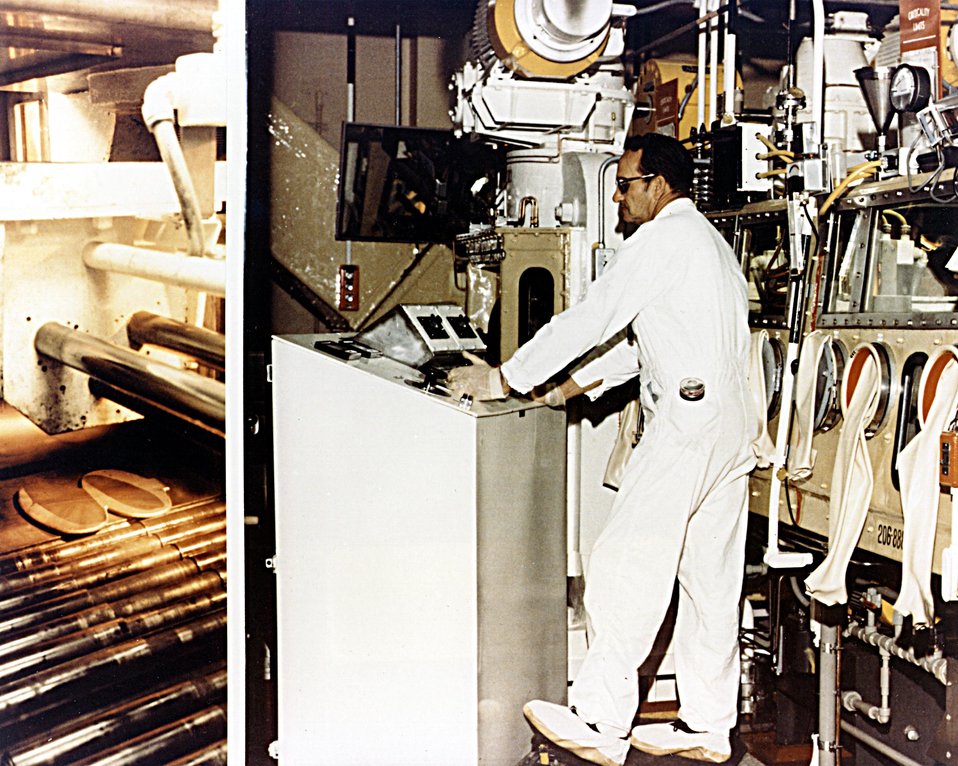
TWO SEPARATE VIEWS SHOW INSIDE AND OUTSIDE OF A ROLLING MILL BOX WITH A FIGURE- EIGHT INGOT OF PLUTONIUM IN BLDG. 707.

ALL PLUTONIUM OPERATIONS AT THE PLANT ARE CARRIED OUT IN HIGHLY SPECIALIZED FACILITIES, PROTECTING THE EMPLOYEES AND THE SURROUNDING POPULATION AND ENVIRONMENT.